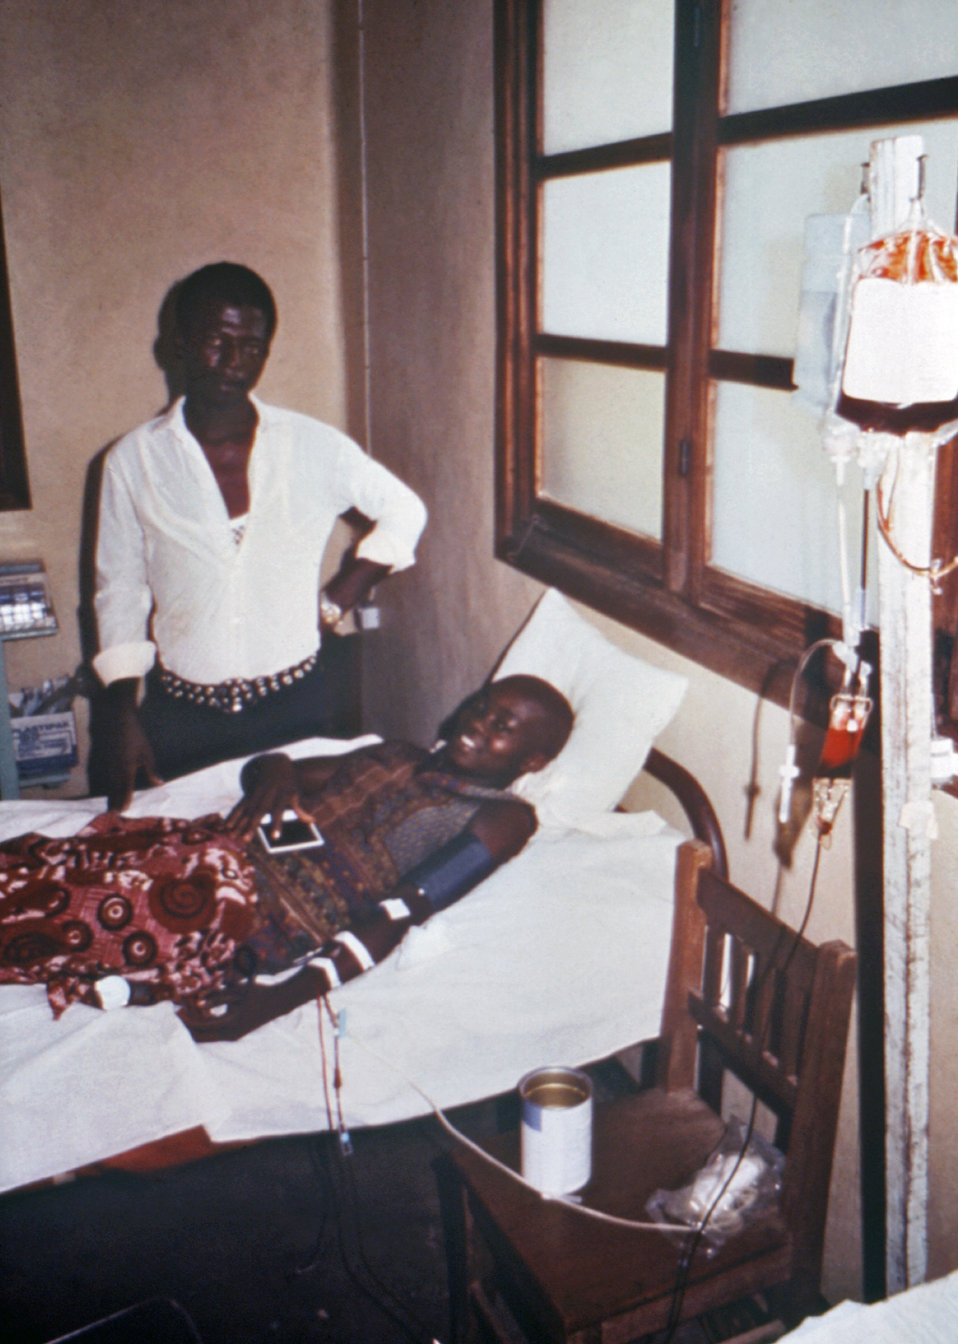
This patient was shown lying in a hospital bed, which might have possibly been the Hospital Mama Yemo located in Kinshasa, Zaire, the nation's capital, during the Zairian Ebola outbreak of 1976.